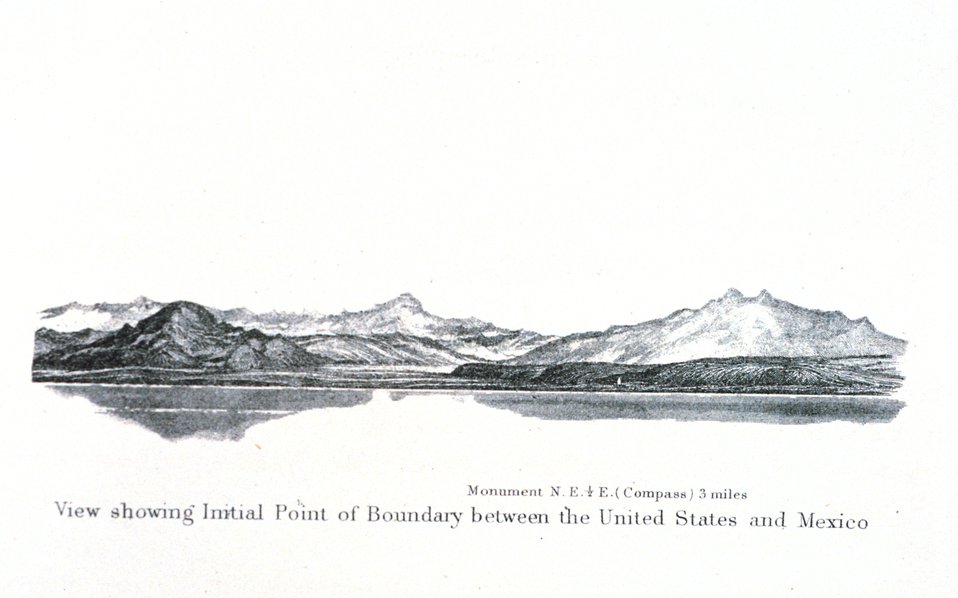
The boundary monument between the United States and Mexico just south of San Diego. This also gives a good seaward view of Tijuana Slough, now part of the the National Estuarine Research Reserve System. In: Pacific Coast. Coast Pilot of California, Oregon, and Washington Territory. . By George Davidson, 1869. P. 8. Library Call Number VK947.D4 1869.